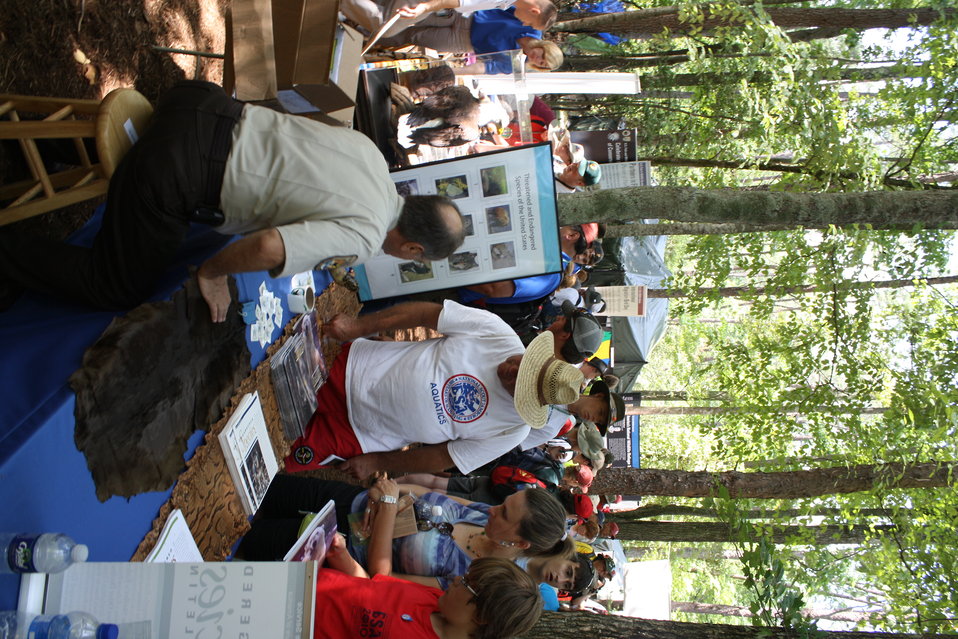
Boy Scout Jamboree 2010